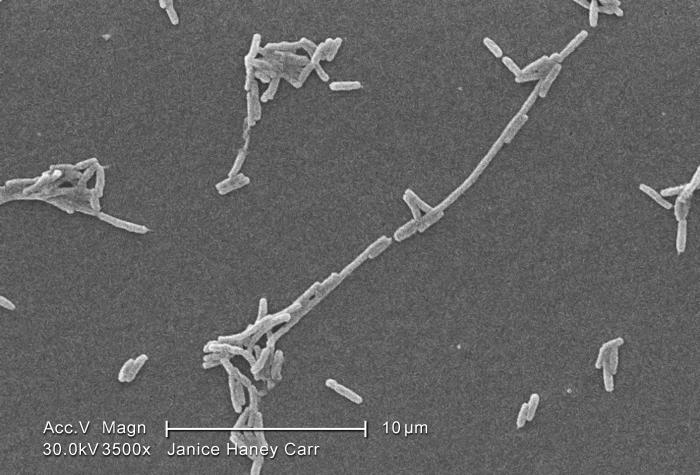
Under a moderately-high magnification of 3500X, this scanning electron micrograph (SEM) depicted a scattered group of Gram-negative Legionella pneumophila bacteria. Please see PHIL 11092 through 11152 for additional SEMs of these organisms, specifically PHIL 11100 for a colorized version of this image.